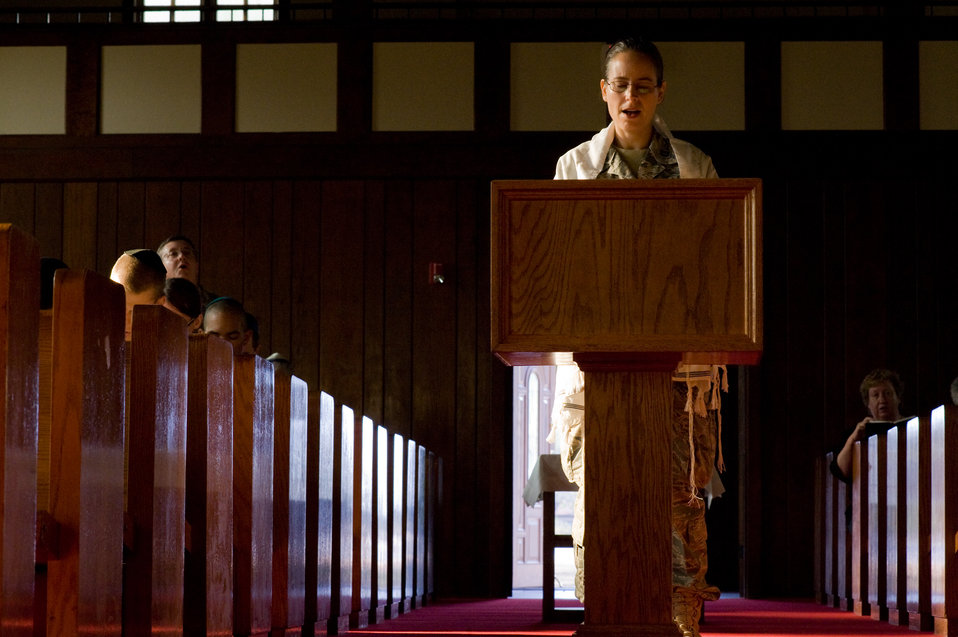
U.S. Air Force Chaplaincy

U.S. Air Force Rabbi, Chaplain, Captain Sarah D. Schechter (standing and wearing a tallit, prayer shawl) leads the evening le'il shabbat service using notes and a special edition siddur: